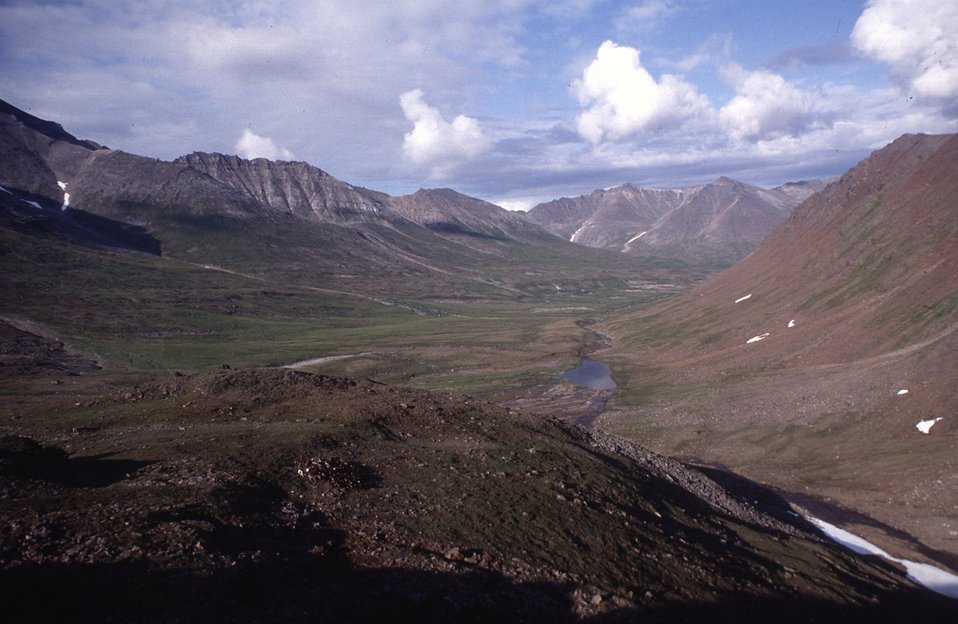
Grand Central Valley, Kigluaik Mts., Seward Peninsula